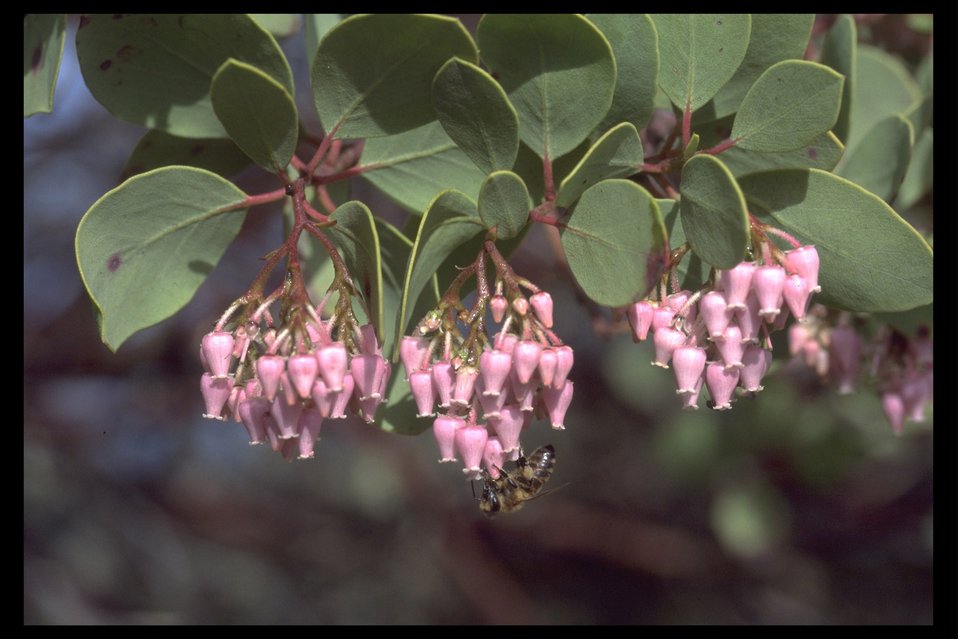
Green Manzanita (Arctrostaphylos patula) at Upper Table Rock.